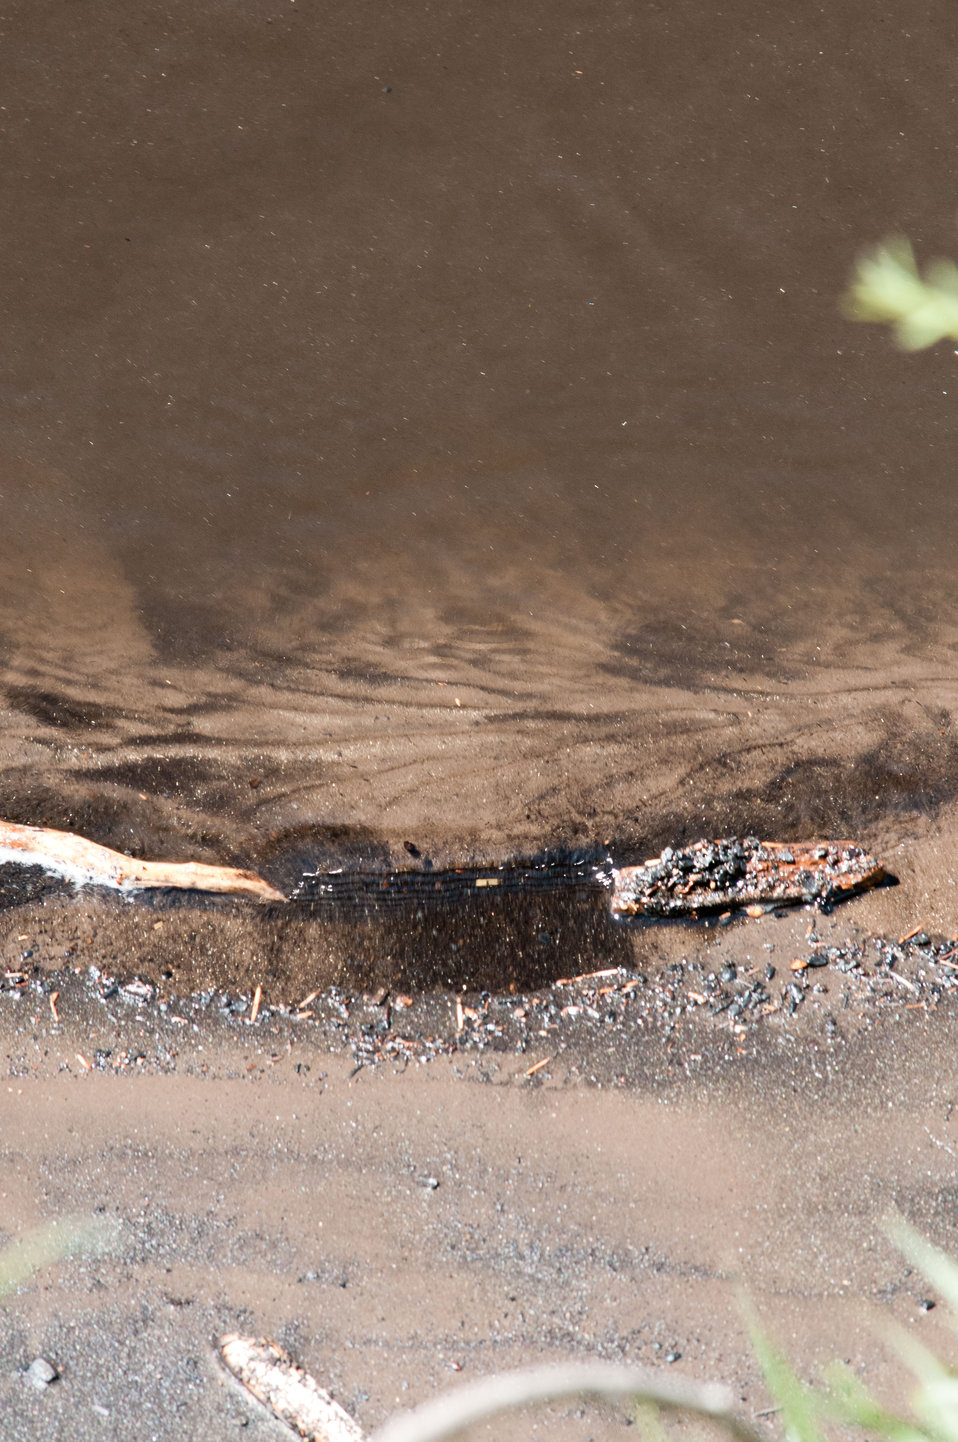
A confluence of two tributaries, the Cache la Poudre and the North Fork of the Cache la Poudre, near Seaman Reservoir, 60 miles north of Denver, Colorado on Friday, July 20, 2012, have been transformed from clear mountain waters to a nearly black water, heavily laden with ash, silt, and burnt debris that was recently washed down mountainsides by thunderstorms. The mountainsides were burned by the Hewlett Gulch Fire (May 14, 2012), in the Poudre Canyon area. At its peak more than 400 firefighters were battling fires pushed by 50 mph winds. When the last embers were cooled, more than 12-square miles lay blacked at a cost of approximately 3.2 million dollars. The aerial distribution of straw has successfully kept nearby Seaman Reservoir clean for the drinking water of the City of Greeley. Forest Service lands receive straw, while private and other lands receive a seed mix and straw to promote ground cover plant growth on ash-covered lands. In total, 1,800 tons of straw will be applied during the 14-day operation. One quarter of the cost was paid by the City of Greeley and the U.S. Department of Agriculture funded the remainder.